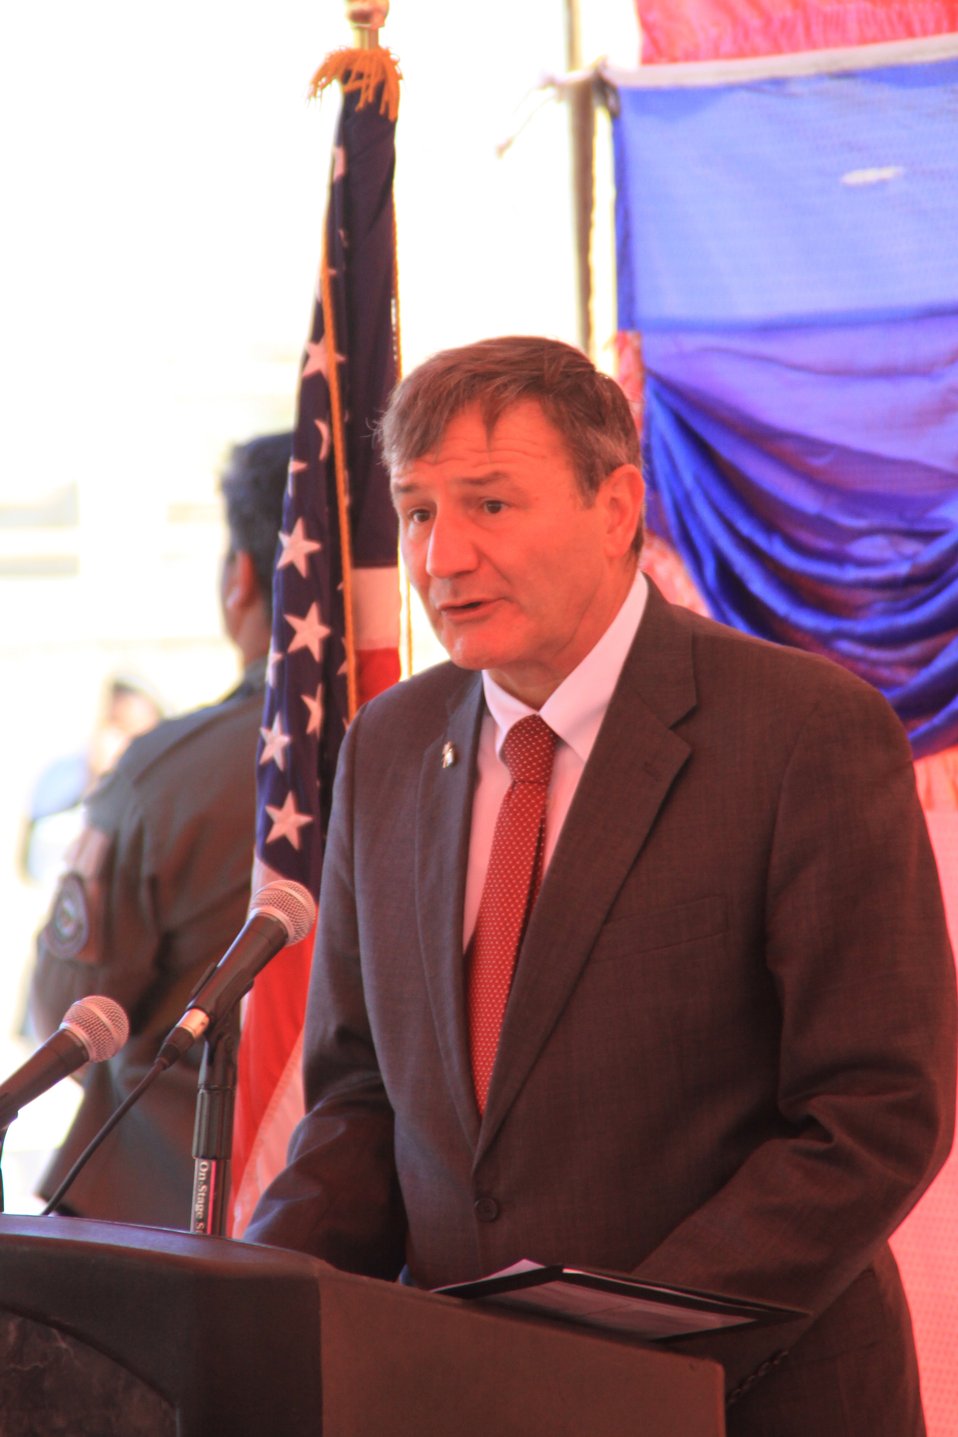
AVIPA Plus Wheat Seed Distribution 101005